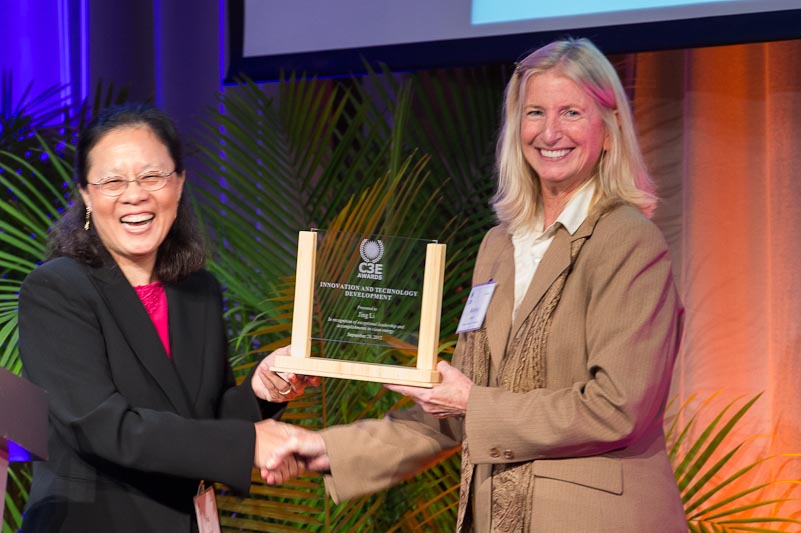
Jing Li

C3E Award Winner, Innovation & Technology Development